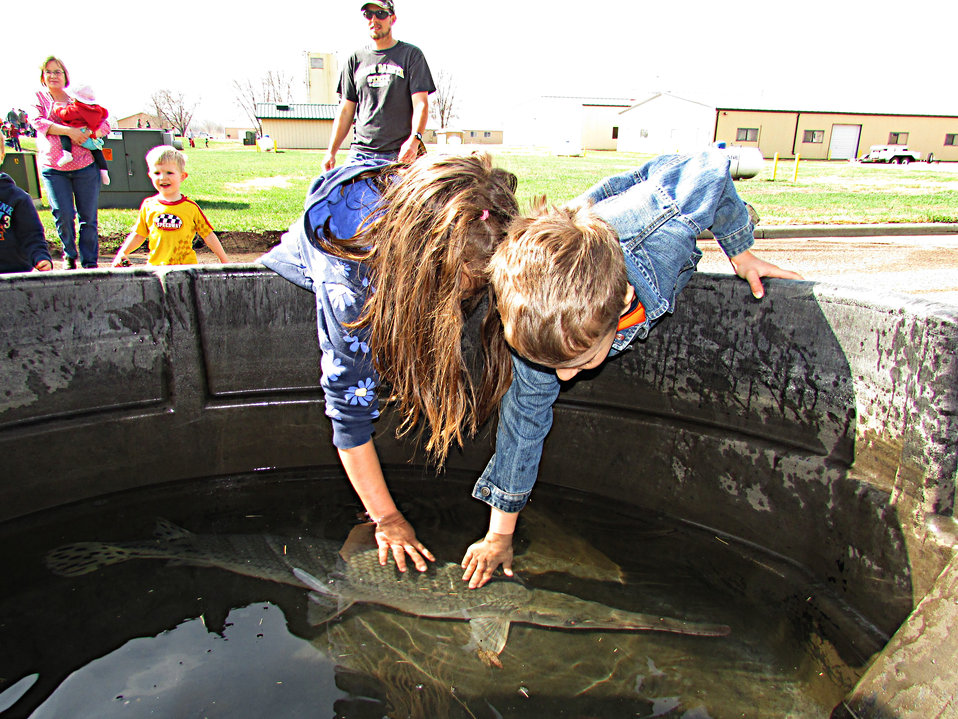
Petting Tank

The tank where kids could pet fish was a big hit. This longnose gar was our biggest attraction.